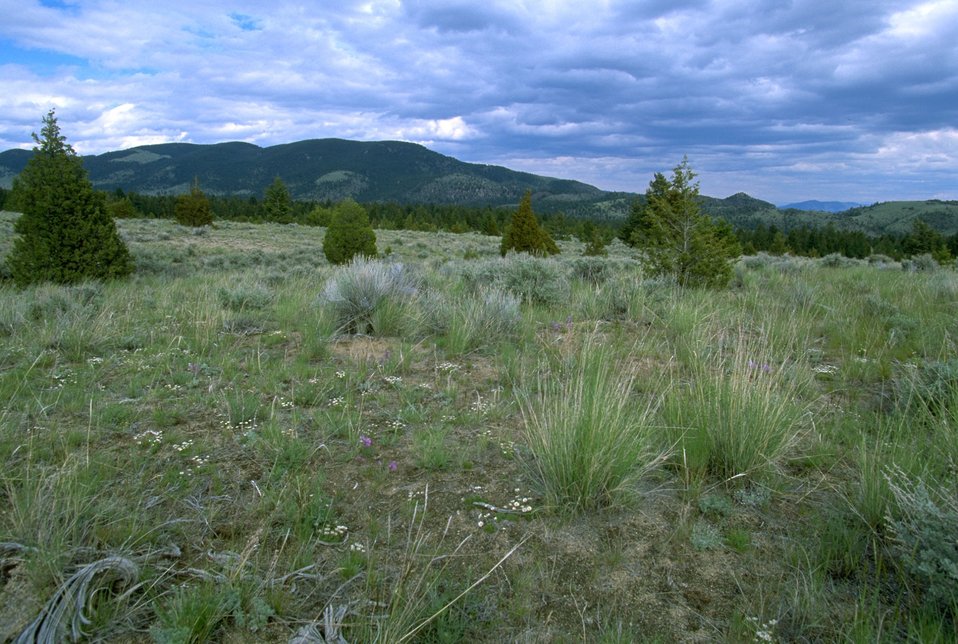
Wildflower surrounded by wild grasses and sagebrush